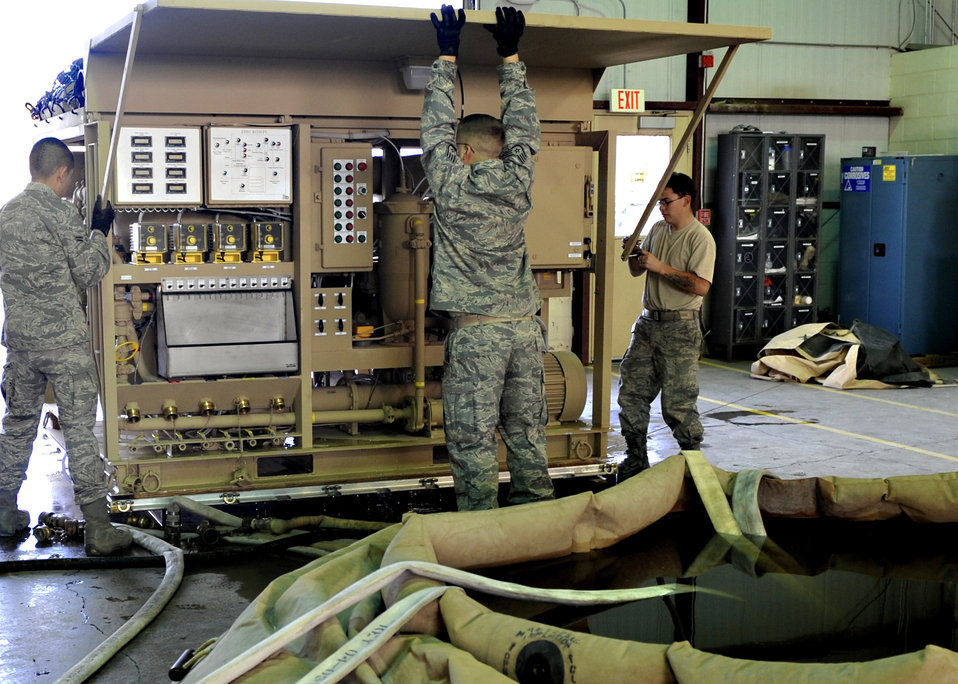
Holloman Airmen prepare to help Haiti

Airmen from the 49th Materiel Maintenance Group at Holloman Air Force Base, N.M., prepare a 1500 reverse osmosis water purification unit, or ROWPU, Jan. 17, 2010, to deploy to Haiti in support of Operation United Response. The base is preparing tents, generators, air conditioning units, ROWPUs and personnel to send to the country after that country was rocked by a magnitude 7 earthquake Jan. 12, leaving thousands dead and even more homeless.